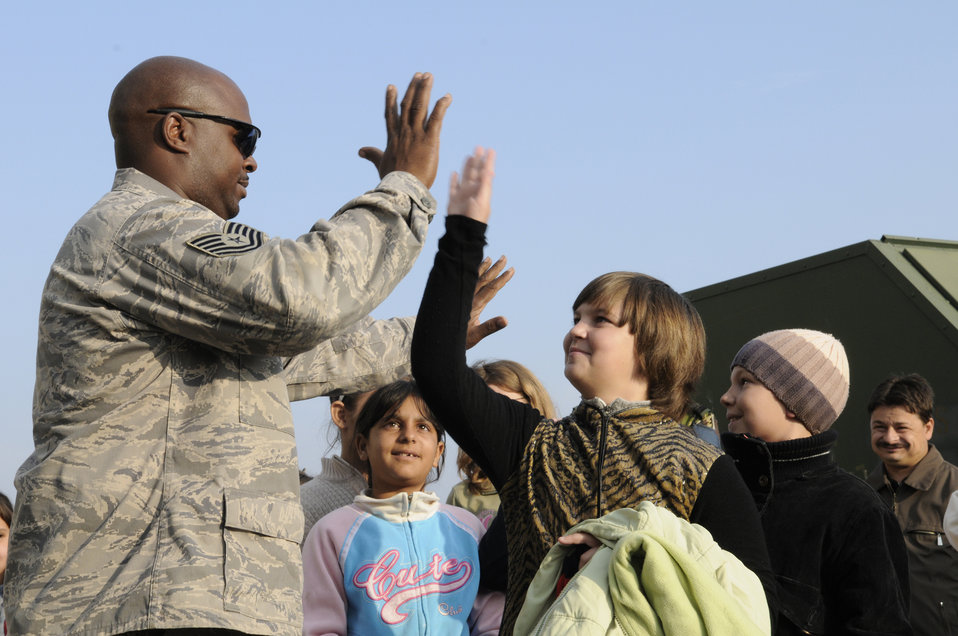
Spangdahlem Airmen reach out to Romanian community

Tech. Sgt. Dexter High high-fives Romanian school children during their visit Oct. 26, 2009, to Camp Turzii, Romania. Members of Spangdalem Air Base, Germany, deployed in support of Operation Dacian Thunder 2009 showed the children a static display of an A-10 Thunderbolt II and let them operate the hose of a fire truck during their visit. The deployed units also donated money and time to help renovate a community center dedicated to helping local children with their academic studies. Sergeant High is assigned to the 81st Aircraft Maintenance Unit.